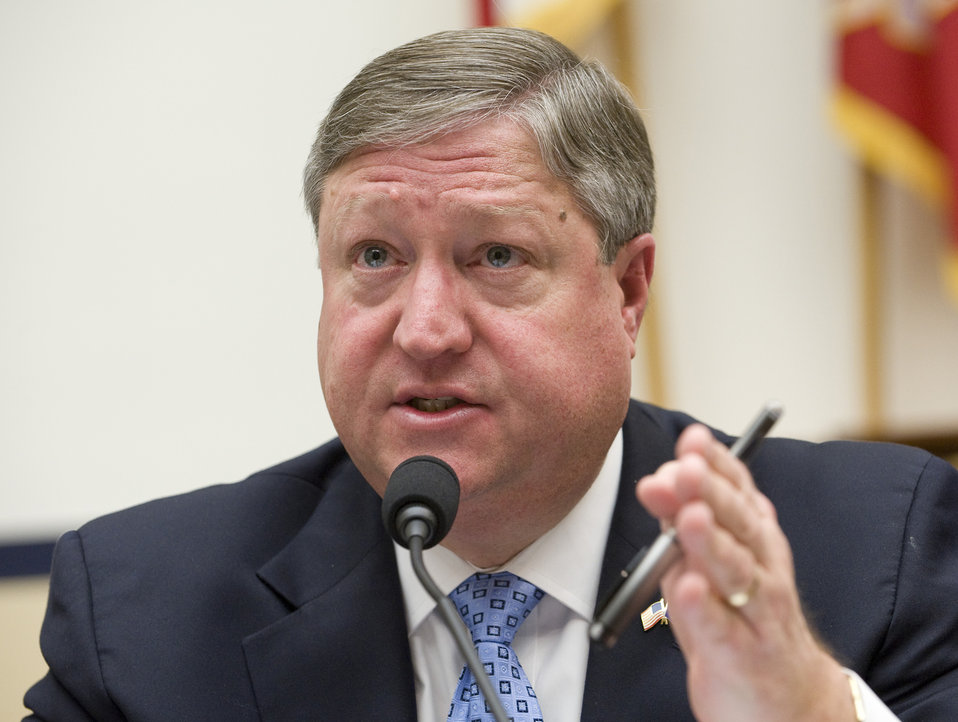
Air Force Budget Proposal to the House Armed Services Committee

Secretary of the Air Force Michael Donley answers a question on the Air Force's fiscal 2012 budget proposal during a House Armed Services Committee hearing Feb. 17, 2011, in Washington, D.C.